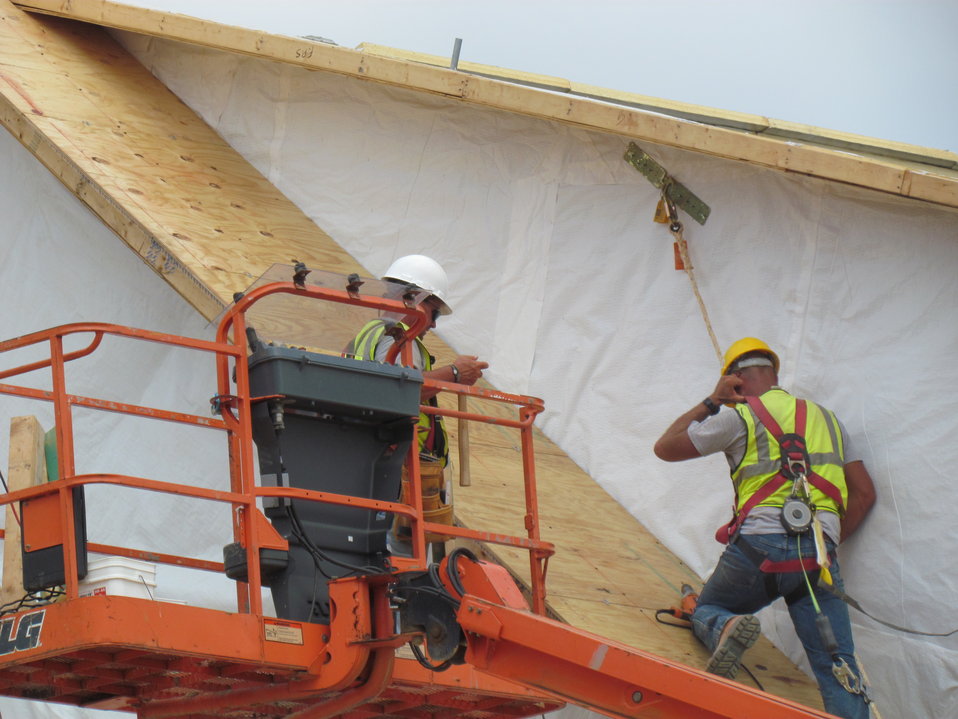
Net-Zero Energy Residential Test Facility - Photo showing workmen installing plywood sheathing over foil-faced insulation.